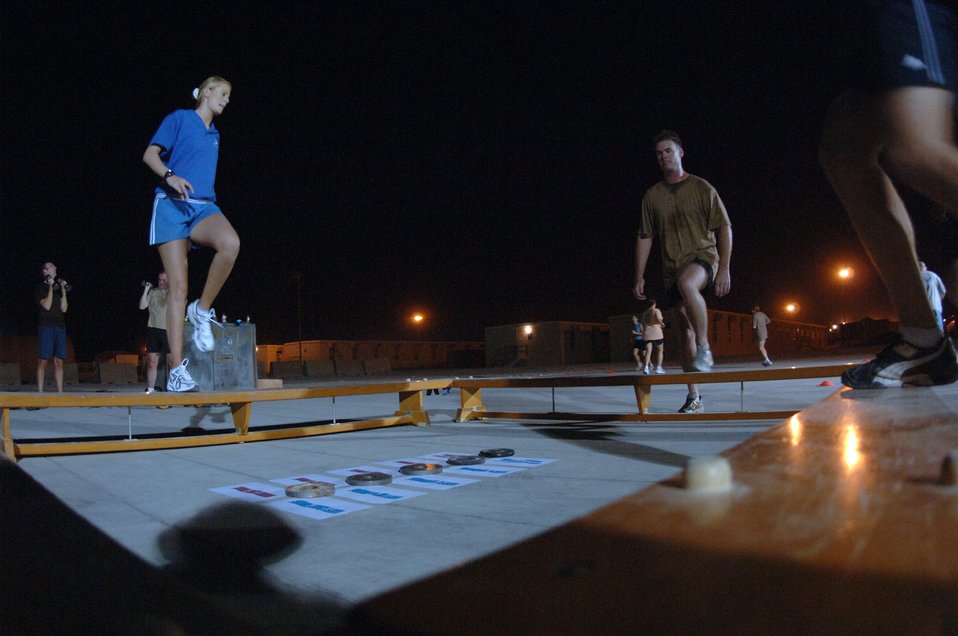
Operation Iraqi Freedom

SOUTHWEST ASIA (AFPN) -- Royal Air Force Corporal Lyn McCartney leads American, English and Australian airmen in stretching exercises before a